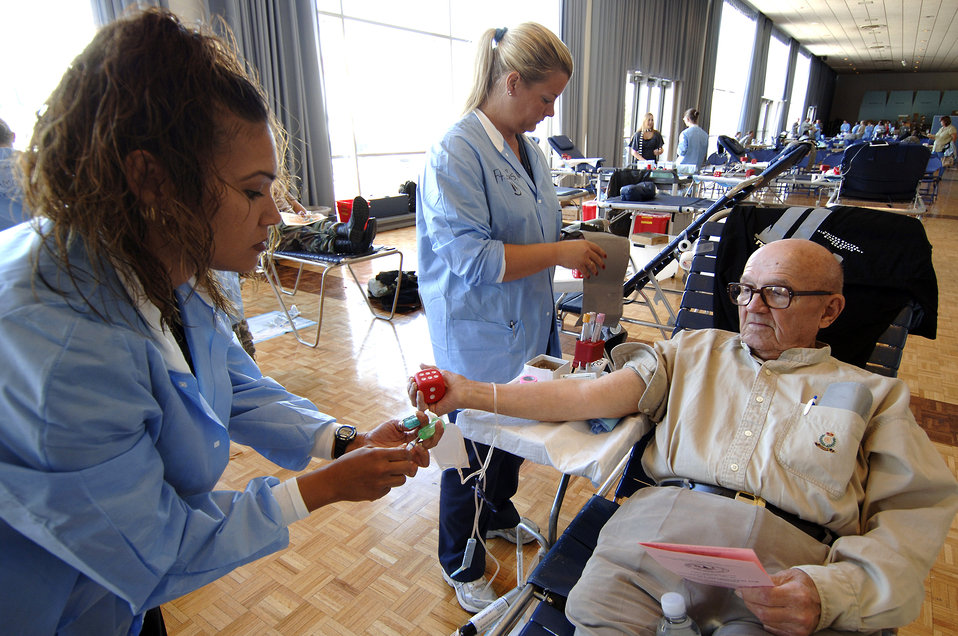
Giving the gift of life

Retired Army Capt. George Froemke donates blood during a blood drive held in the Arnold Hall ballroom Sept. 19 at the U.S. Air Force Academy in Colorado. Blood collected will benefit armed forces members by helping to meet the urgent needs of wounded Americans in Iraq and Afghanistan.